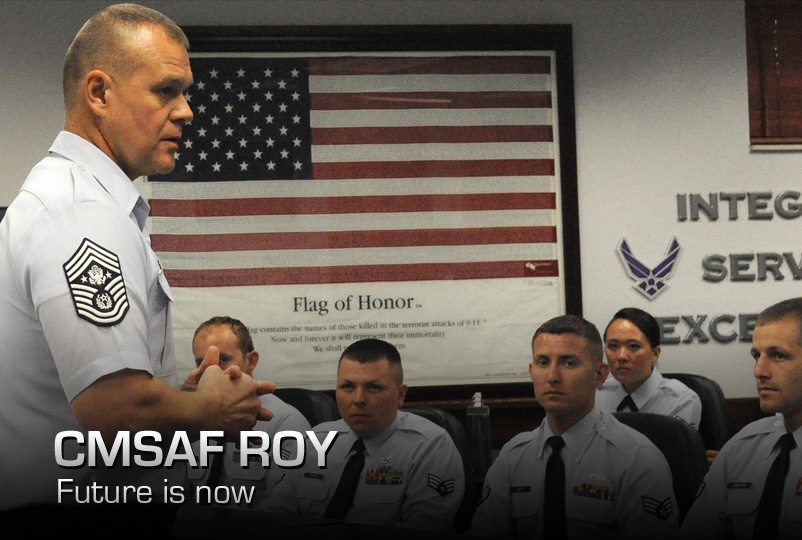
CMSAF Roy: Future is now

Chief Master Sgt. of the Air Force James A. Roy speaks to Airmen Leadership School students July 30, 2012, at Scott Air Force Base, Ill. Roy told the Airmen how important the transition is to becoming a leader in today's Air Force.